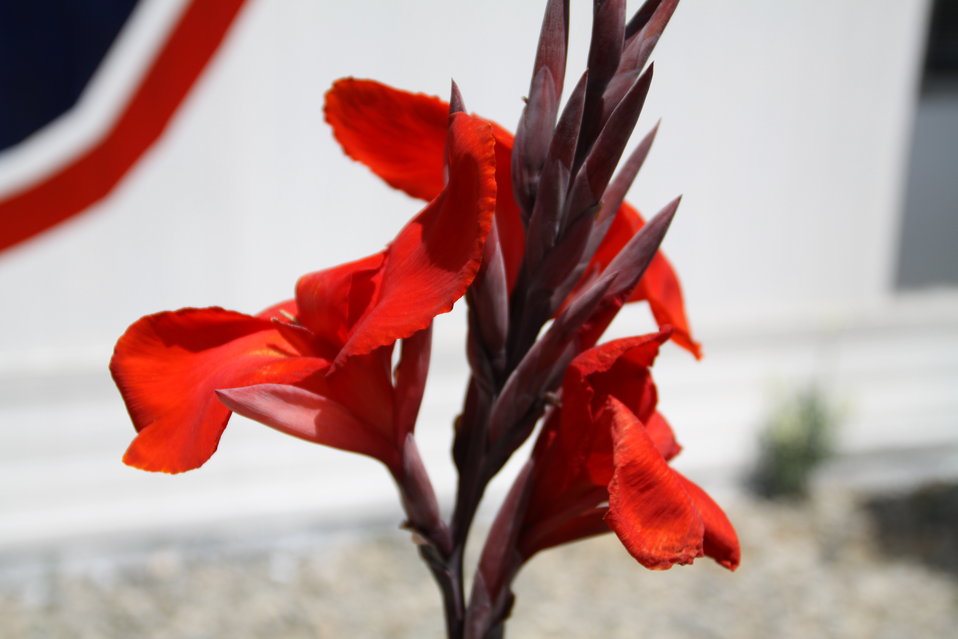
Kabul Official July 4th Celebration